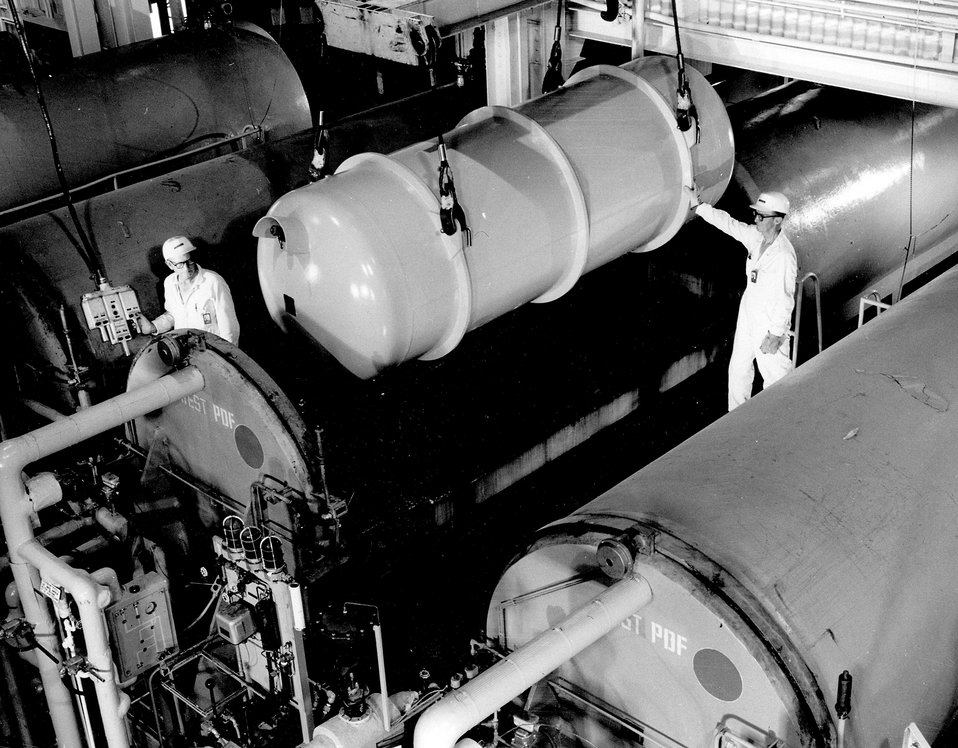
A cylinder of uranium hexaflouride is lowered into a giant autoclave at the Energy Research and Development Administration's Gaseous Diffusion Plant at Oak Ridge. Circa 1971.